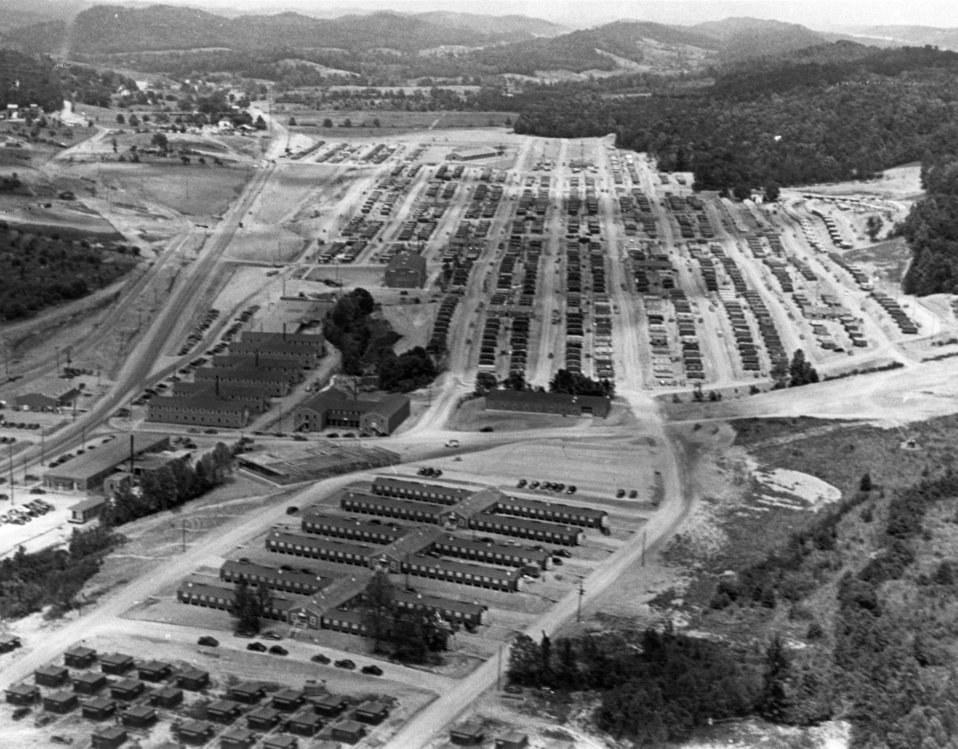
Aerial of Oak Ridge